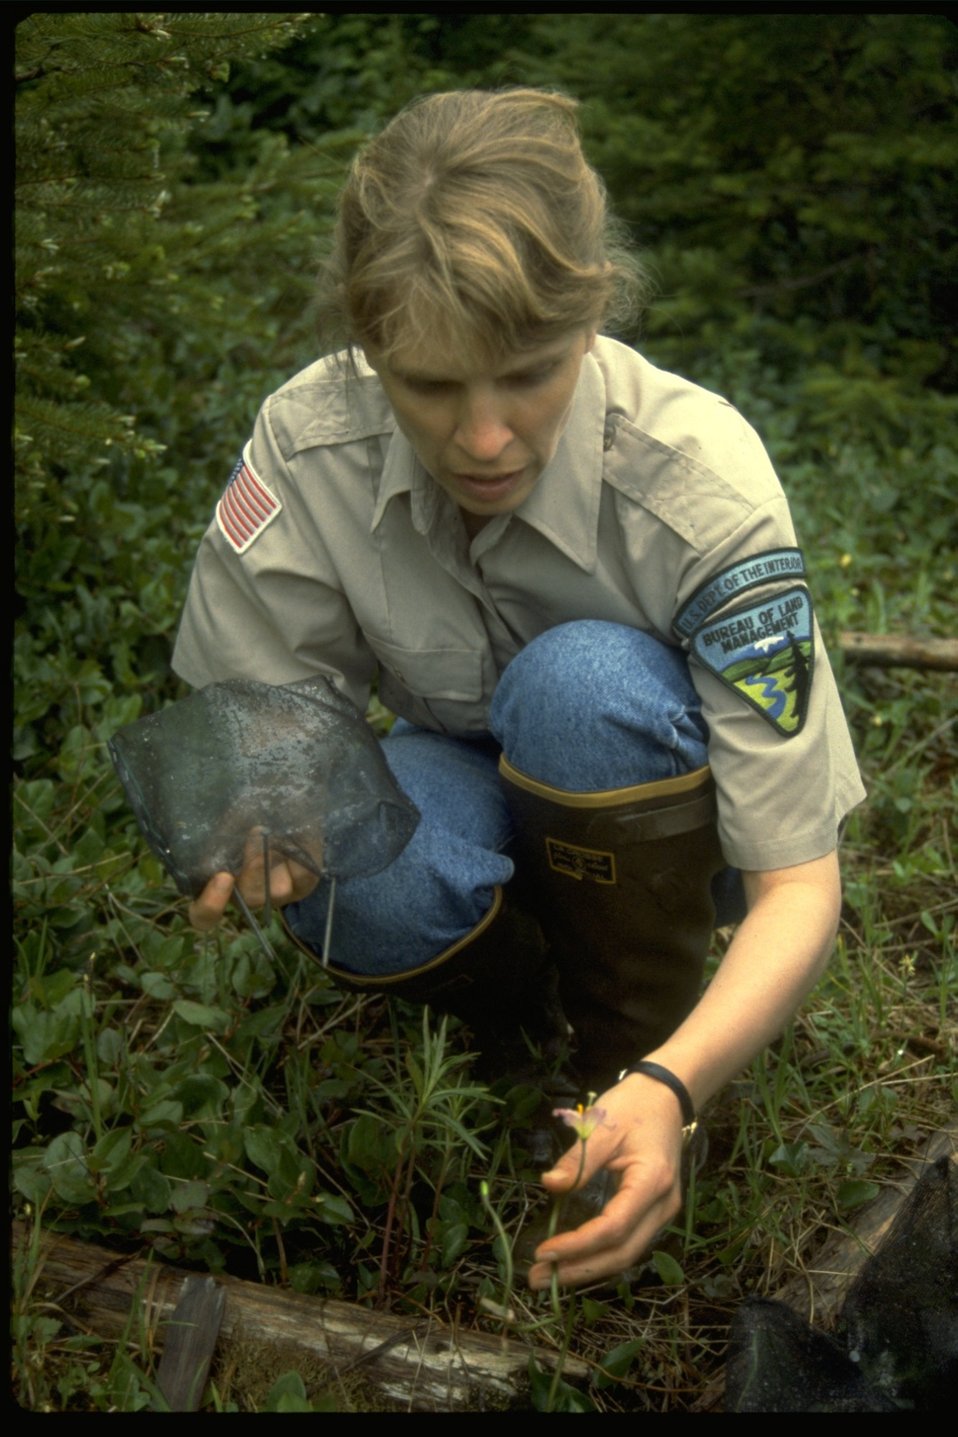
Botanist Julie Theil moniters Erythronium.